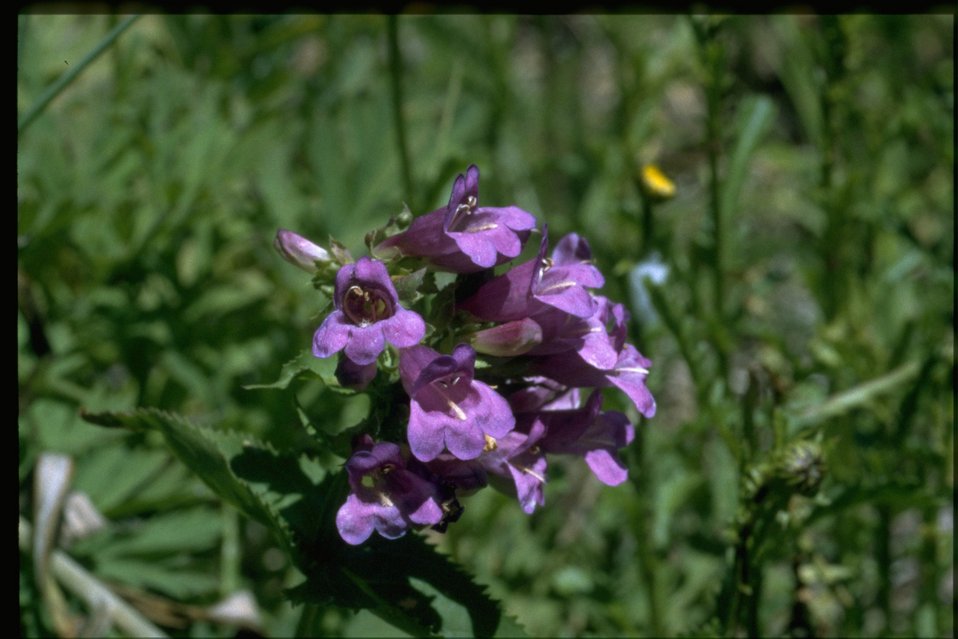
Medium shot of Penstemon cardwellii.